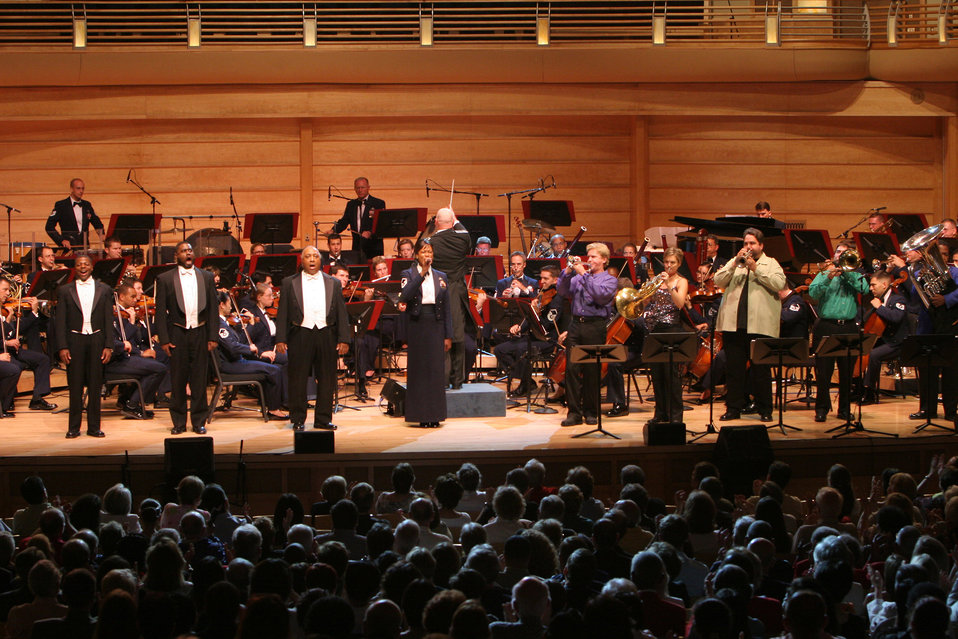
AF anniversary concert airs nationwide Nov. 2

The U.S. Air Force Band is joined by guest artists The Tenors: Cook, Dixon and Young, Empire Brass and guest host, Mary Therese Tebbe to perform a gala concert celebrating the 60th Anniversary of the Air Force. The concert took place June 30 at the Strathmore Music Center in Bethesda, Md. and will be broadcast nationally on public television Veterans Day 2007.